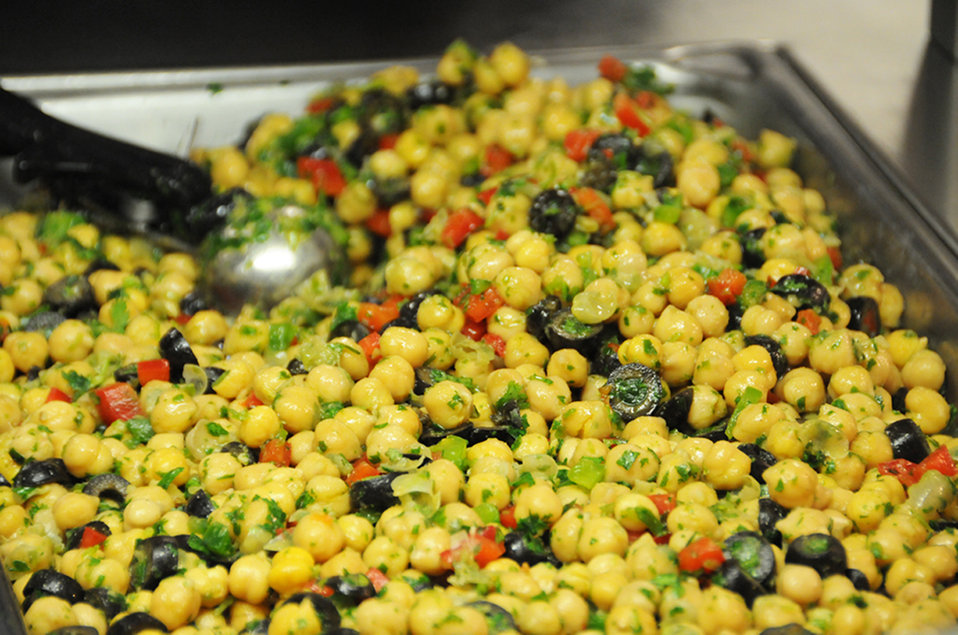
Chix Peas Web

Chick peas were also on the menu. With dishes like this being served, it’s clear that the palettes of school-aged children have evolved over the years.